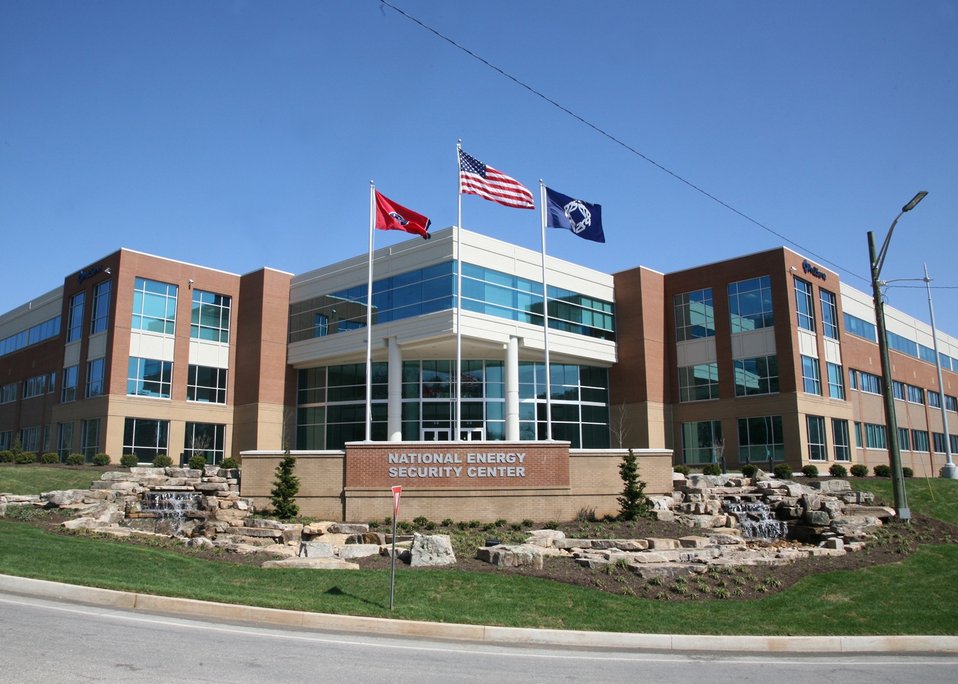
A Recovery Act Tale of Two Campuses: Out With the Old, In With the New

Clearing old, dilapidated facilities will expand the Science and Technology Park with new buildings such as the National Security Energy Center and the Commercialization Center.